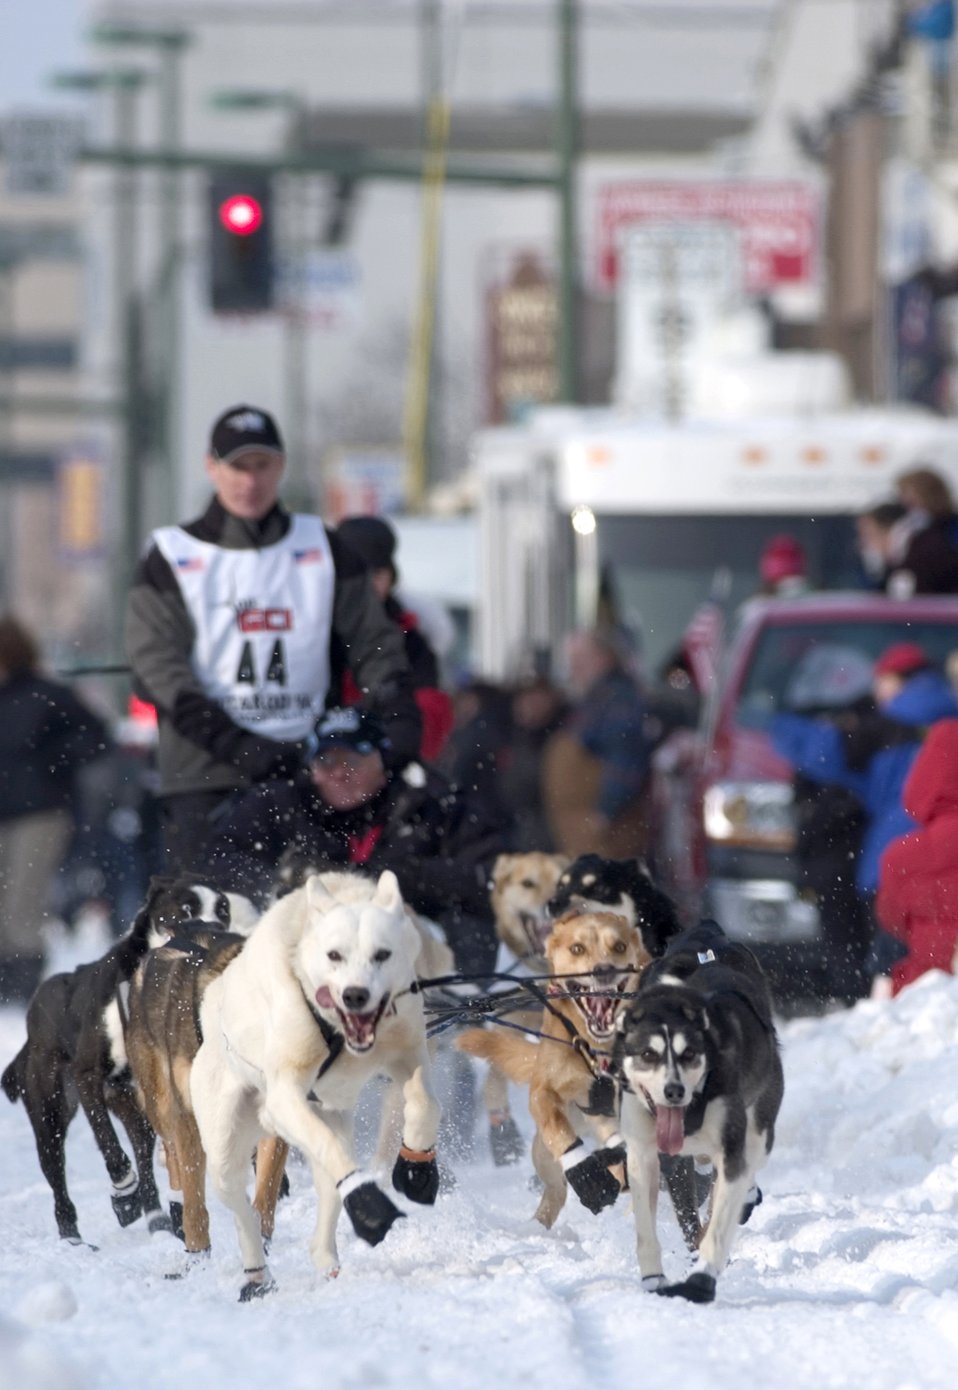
2006 Iditarod

Major (Dr.) Thomas Knolmayer and his 16-dog team take off from ceremonial starting line of the 2006 Iditarod Sled Dog Race in downtown Anchorage, Alaska, Saturday, March 4, 2006. This is the second year in a row Dr. Knolmayer has run the Iditarod after becoming the first active-duty servicemember to ever complete the 1,150-mile race last year. The race ends in Nome and covers a distance equal to New York to Orlando, Fla.